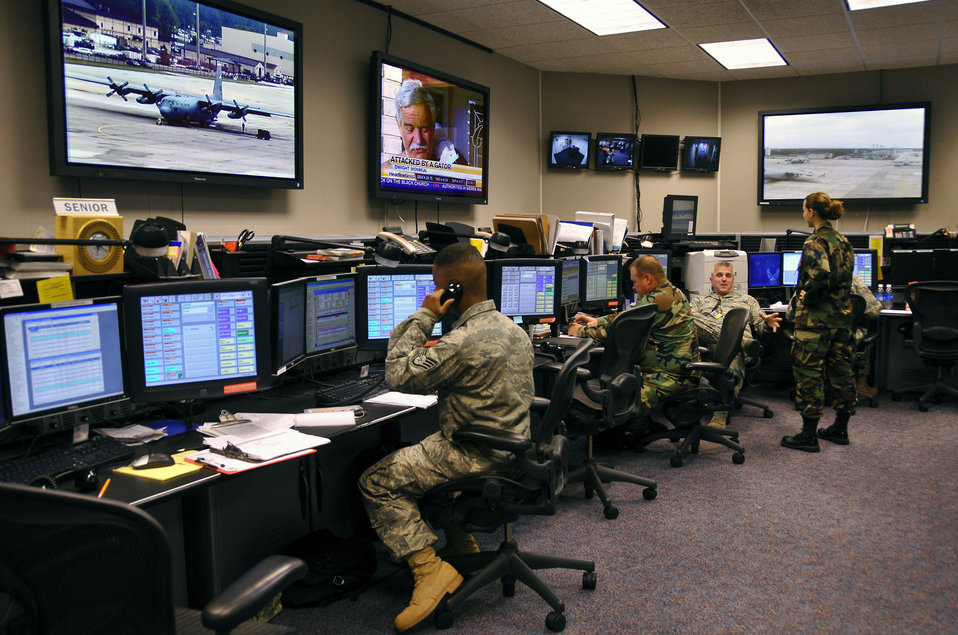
Integrated wing command post

The fully-integrated command post at Pope Air Force Base, N.C., monitors base activities 24/7. Reservists and active duty Airmen work side-by-side to execute the command post mission.